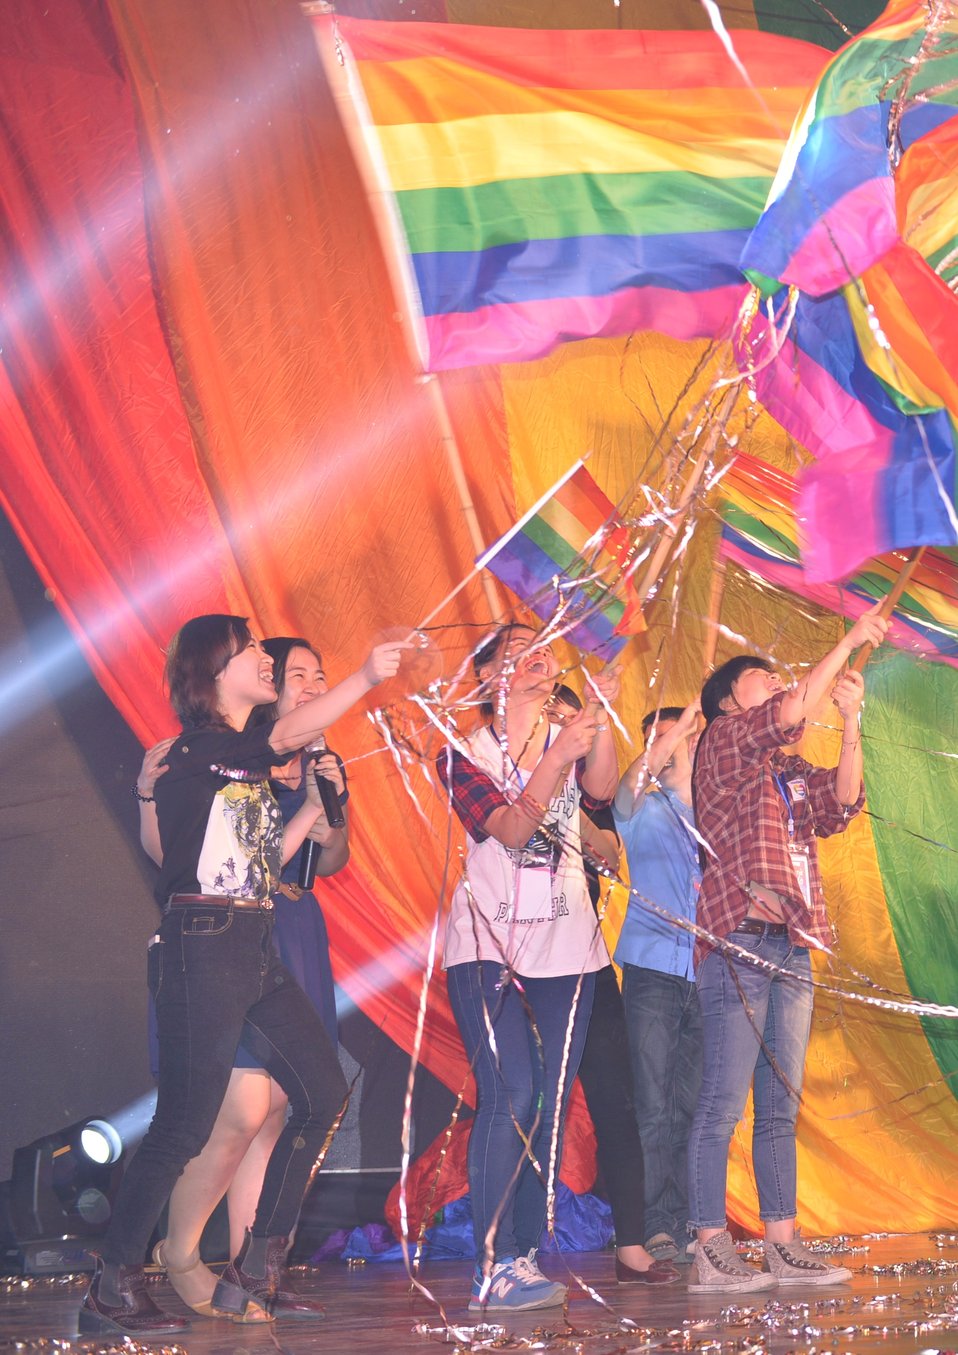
Celebration at the iSee LGBT Event

USAID Vietnam